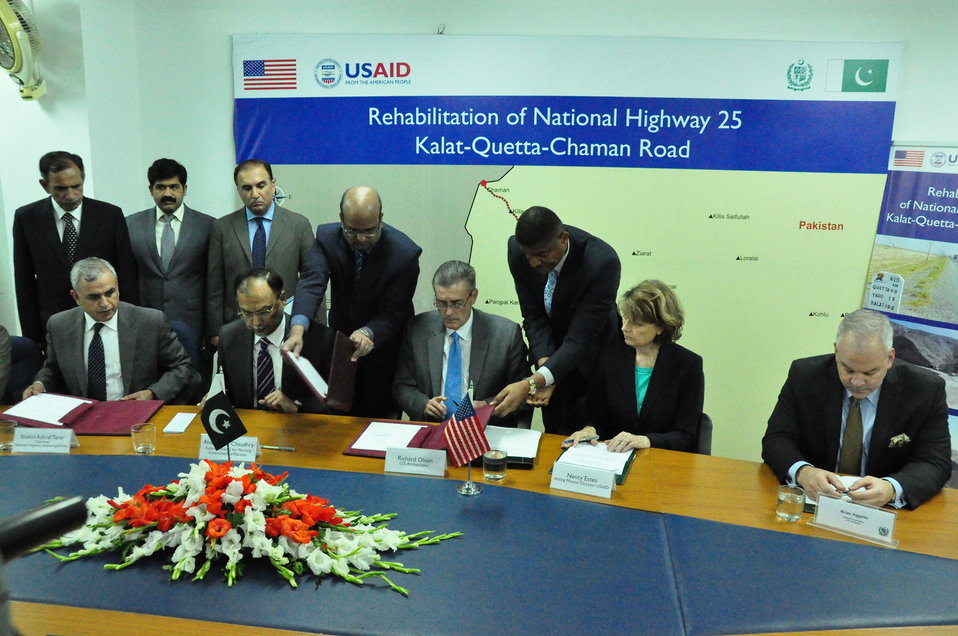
The United States and National Highway Authority Sign Agreement to Rehabilitate Kalat-Quetta-Chaman Highway